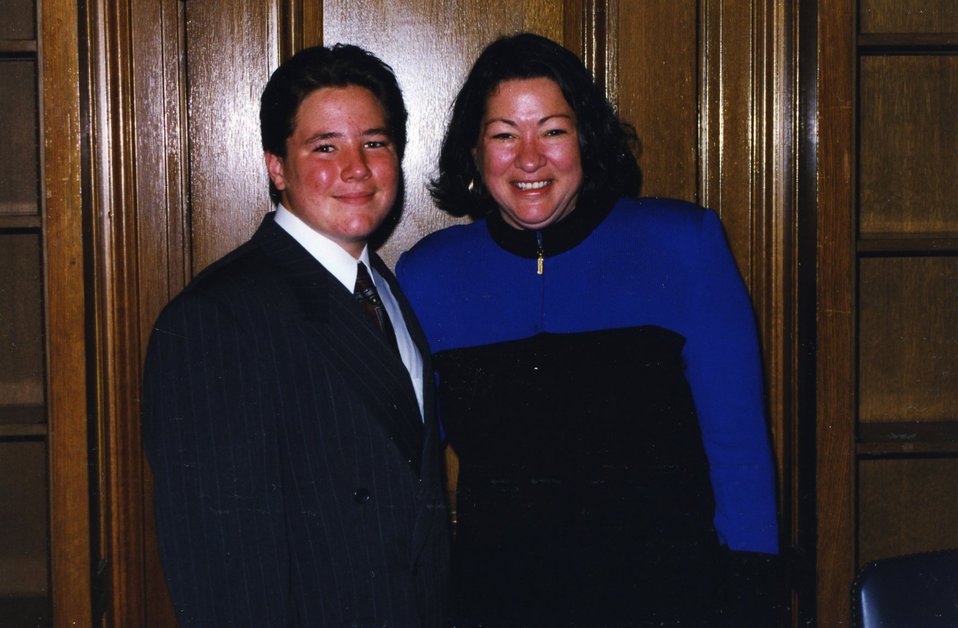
Godson 2

Judge Sonia Sotomayor with her godson Thomas “Tommy” Butler at the United States Court of Appeals signing ceremony in 1998.